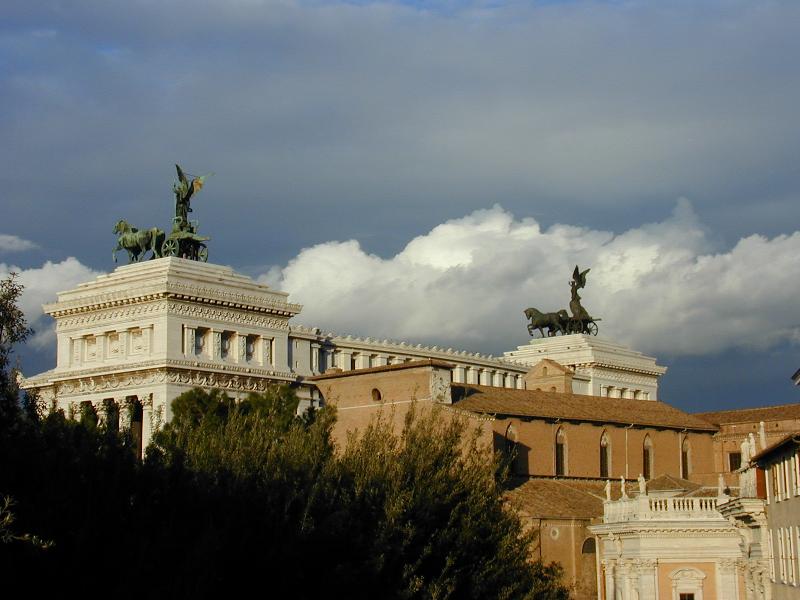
001229 10 altare della patria vittorie